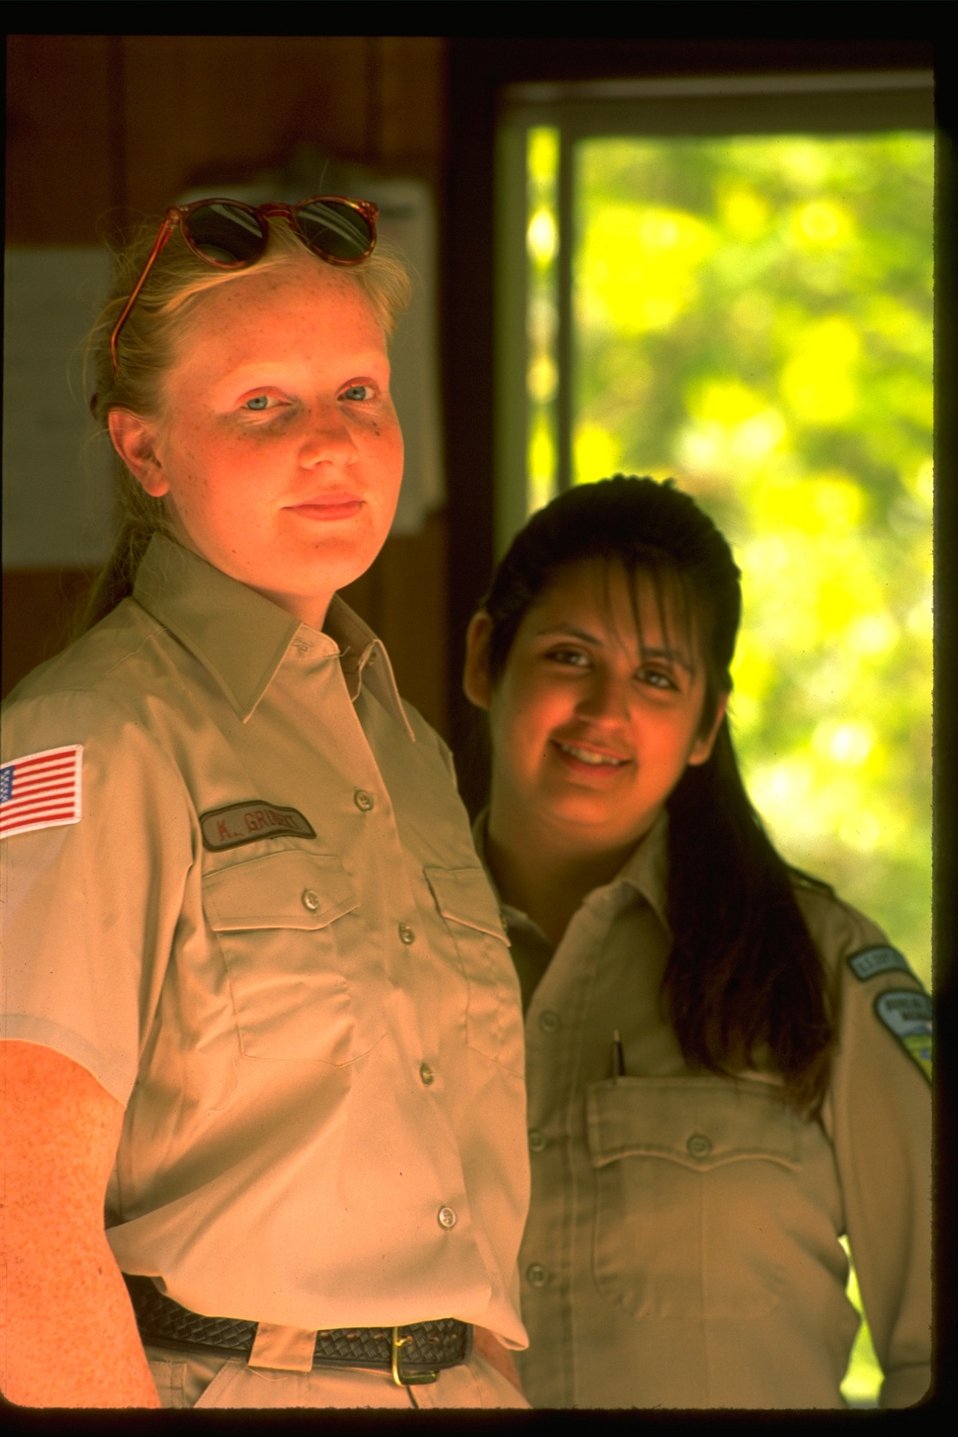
Loon Lake summer temp help.